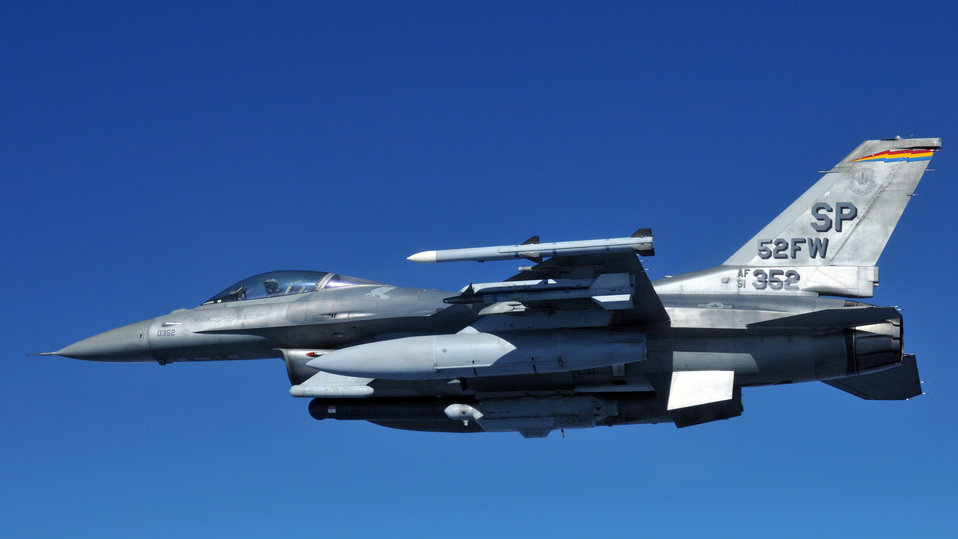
Iceland's volcanic ash affects Mildenhall exercise

Prior to flying operations being grounded, an F-16 Fighting Falcon from Spangdhalem Air Base, Germany, flies off the wing of a 100th Air Refueling Wing KC-135 Stratotaker during Exercise Brilliant Ardent April 15, 2010, at Royal Air Force Mildenhall, England.